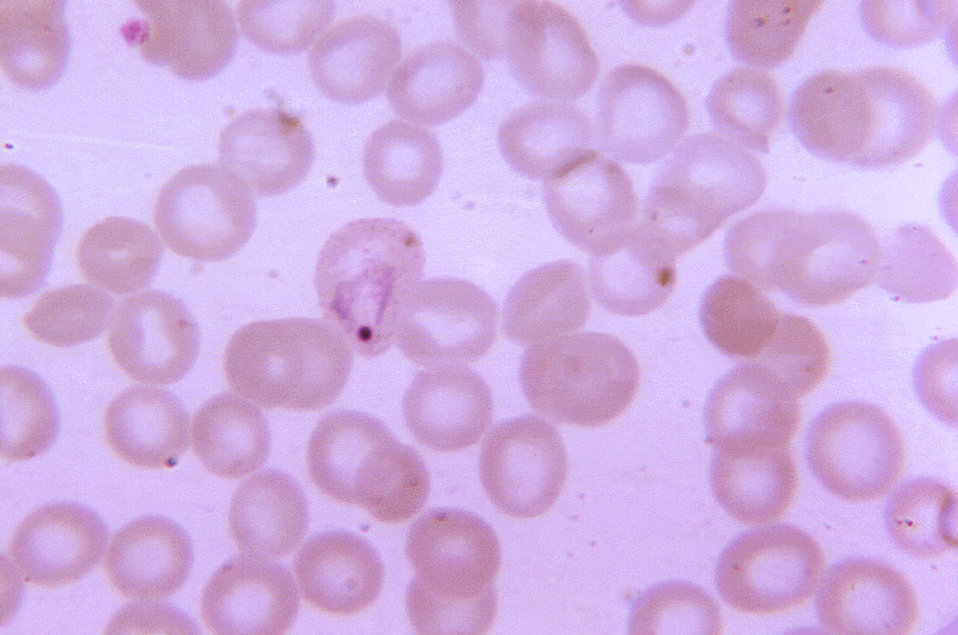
Magnified 1125X, this thin film photomicrograph of a blood smear, revealed the presence of a young growing Plasmodium vivax amoeboid trophozoite.